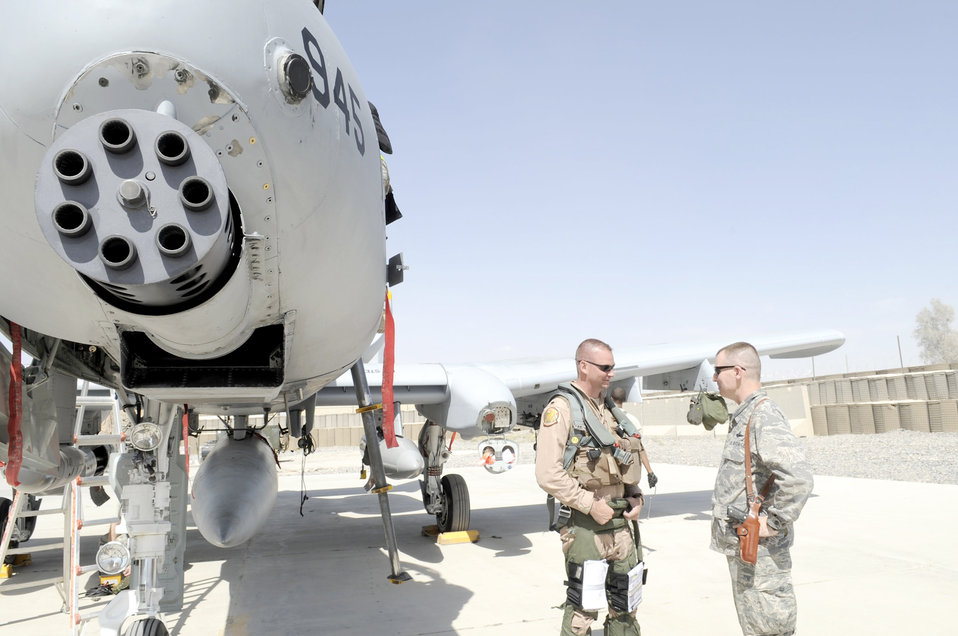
A-10 Thunderbolt II post-flight check

Col. Peter Hunt greets Lt. Col. Ron Stuewe upon arrival May 11, 2010, at Kandahar Airfield, Afghanistan after a four-hour flight from Spangdahlem Air Base, Germany. Colonel Hunt is the vice commander with the 451st Air Expeditionary Wing and Colonel Stuewe is the commander with the 81st Expeditionary Fighter Squadron.